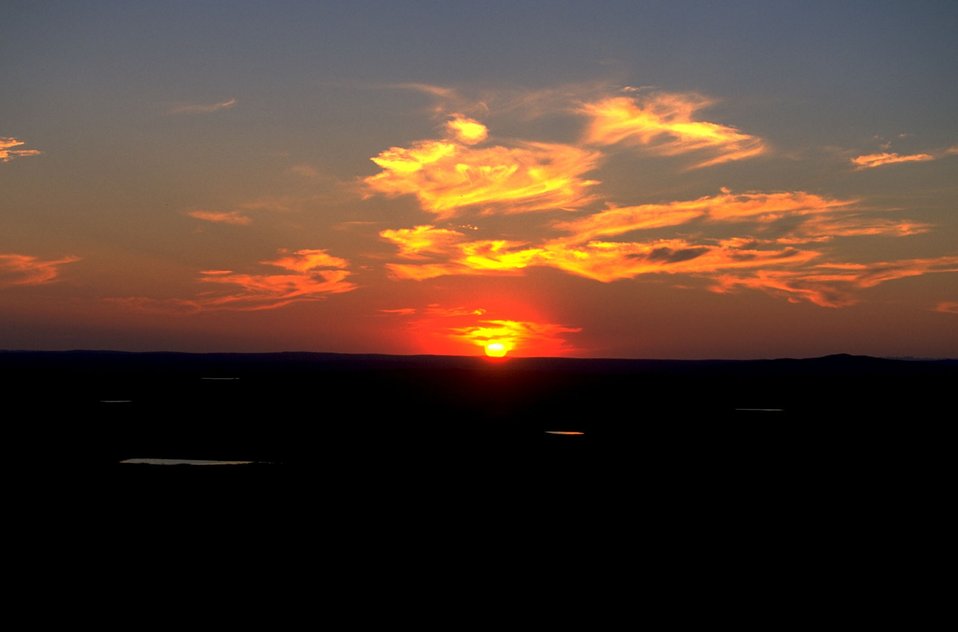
Sunset 35 mles north of Belle Fourche on Porcupine Allotment